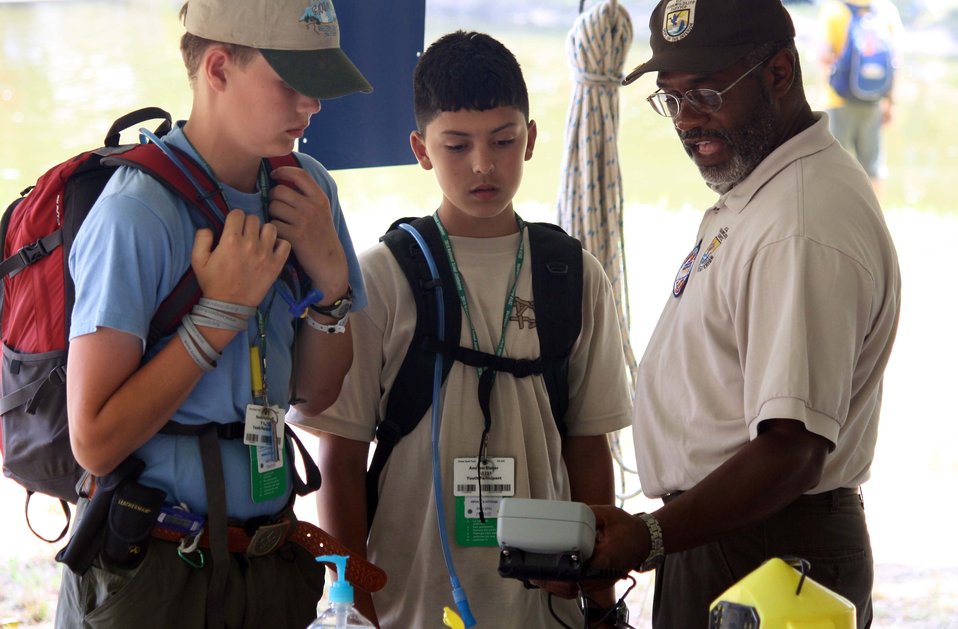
Boy Scout Jamboree 2010